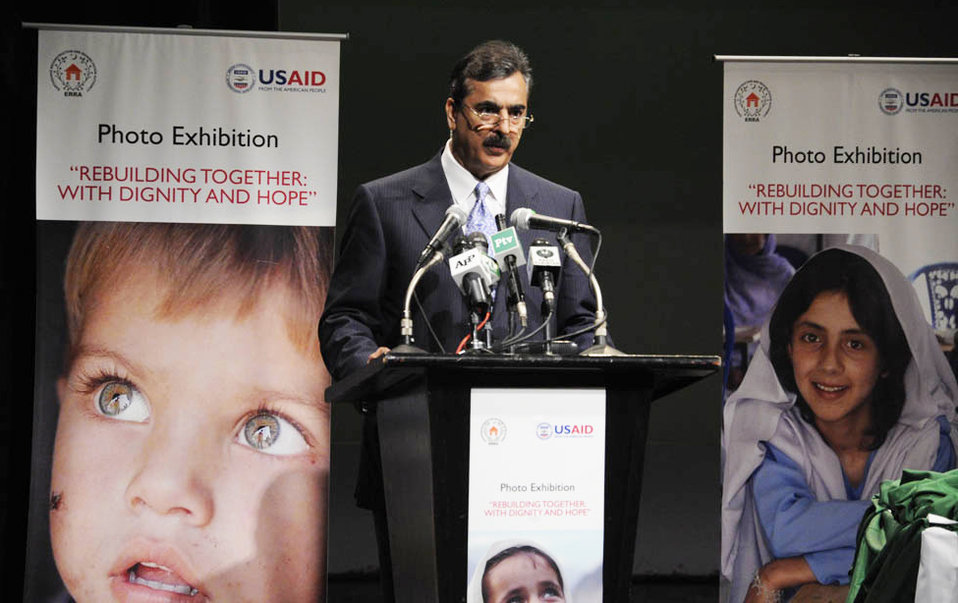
Photography and Drawing Exhibition on Pakistan 2005 Earthquake “Rebuilding Together: With Dignity and Hope”

Syed Yousuf Raza Gilani, Prime Minister of Pakistan speaking at a photo exhibition 'Rebuilding Together: With Dignity and Hope' sponsored by USAID at Pakistan National Council of Arts (PNCA) in Islamabad.